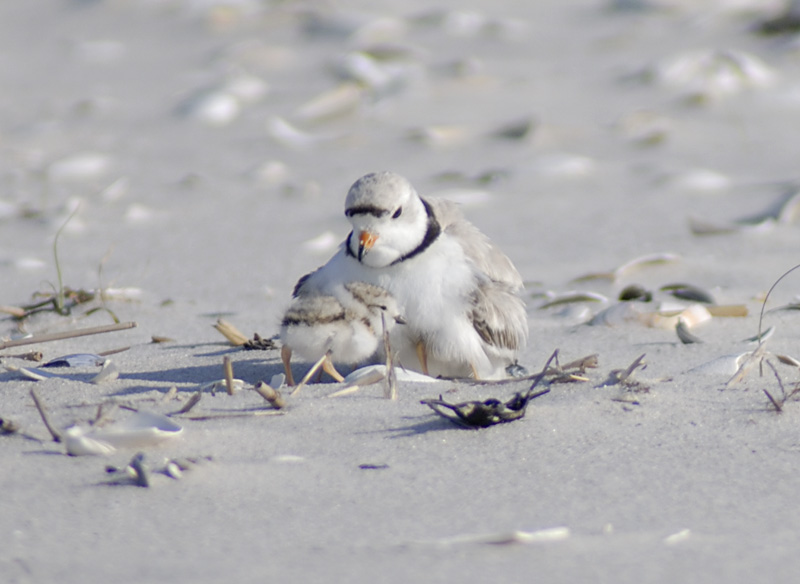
piping plover with chick